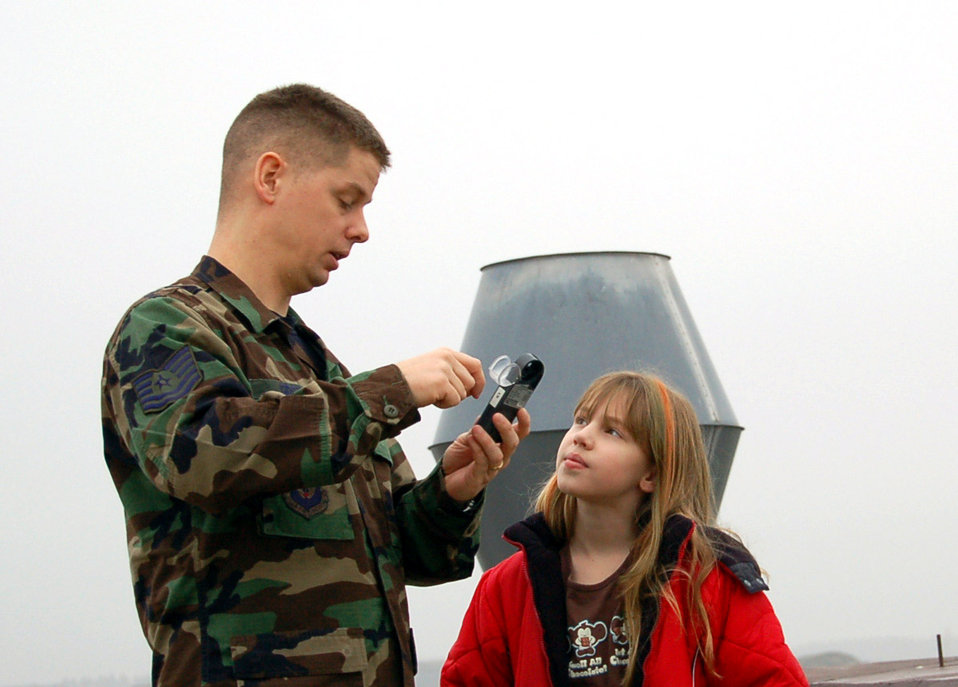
National Job Shadow Day

Tech. Sgt. Donald Odom explains to his daughter Mackenzie how take wind speed, temperature and dew point readings using a kestrel. Mackenzie spent National Job Shadow Day Feb. 2 with her father learning about his job. Sergeant Odom is a weather forecaster with the 52nd Operations Support Squadron at Spangdahlem Air Base, Germany.